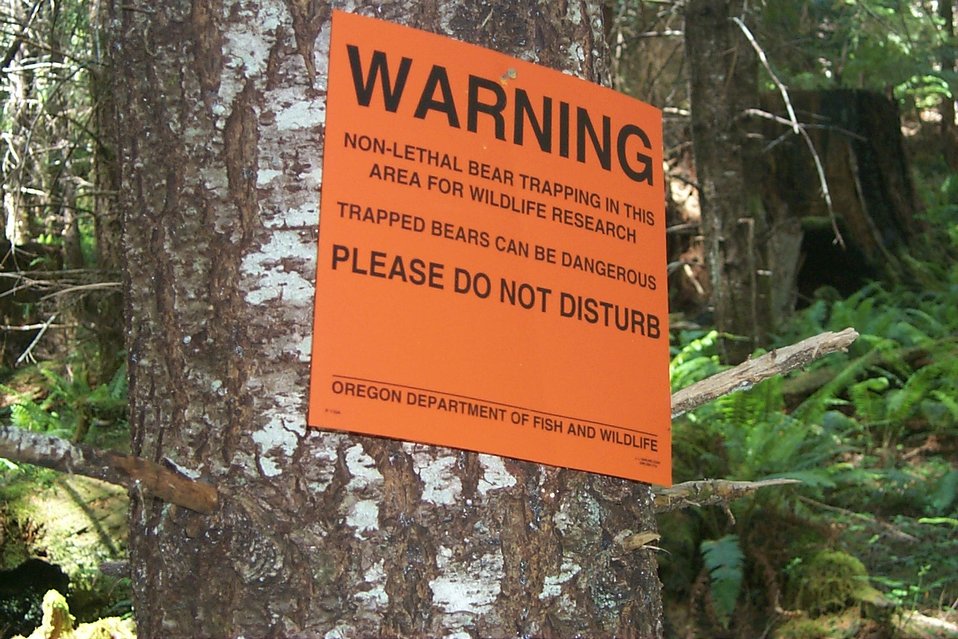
Camas East Timber Sale in Late Successional Reserve.